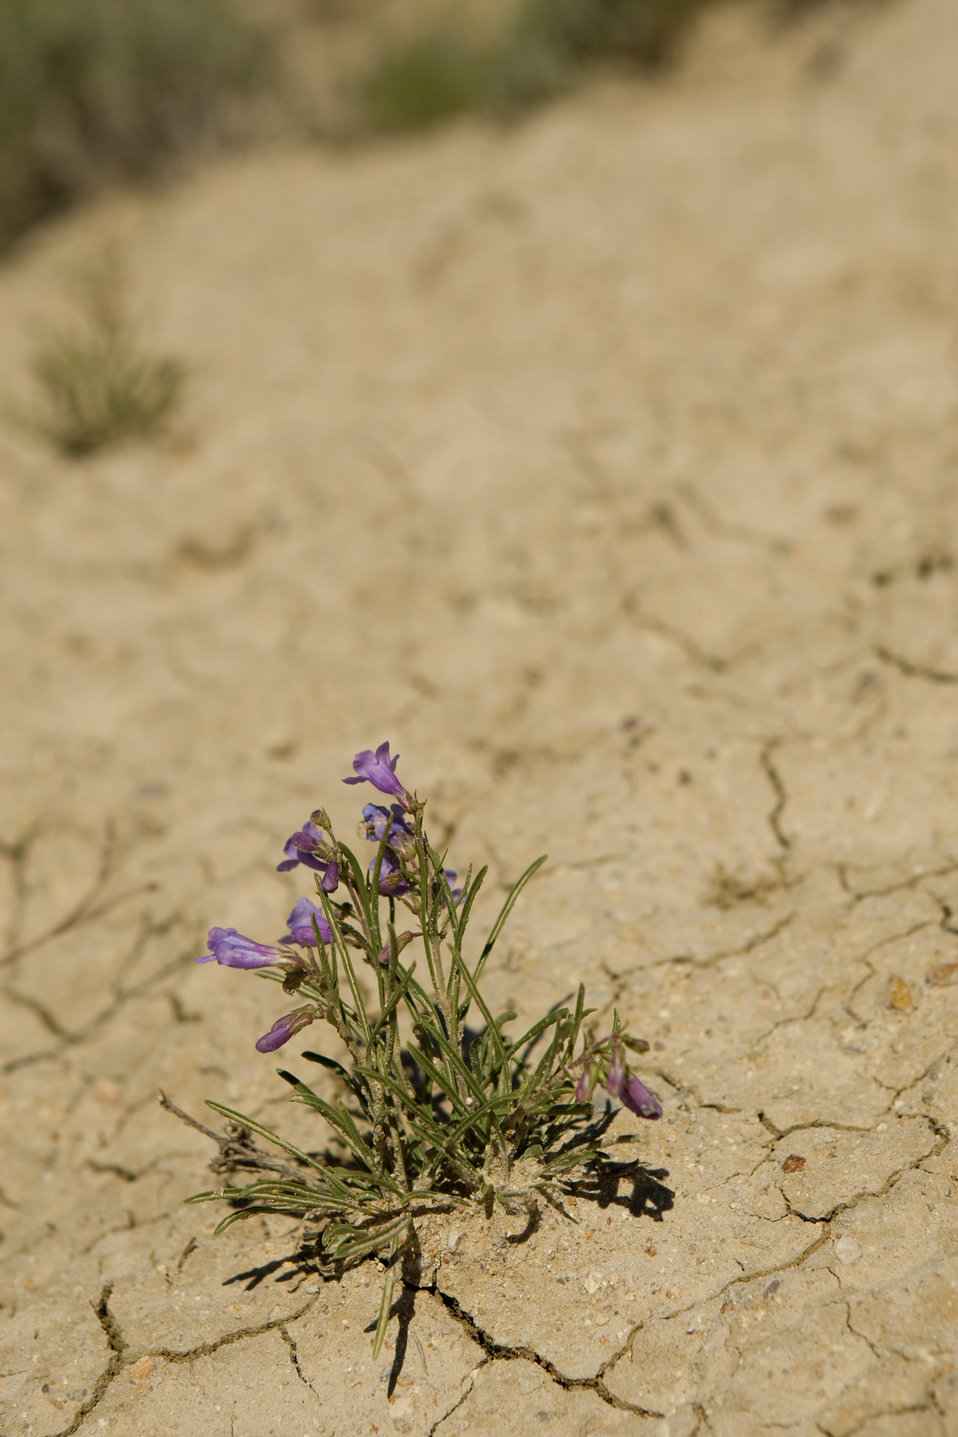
Colorado Rare Plant Conservation Initiative

The Colorado Rare Plant Conservation Initiative (RPCI) is a partnership of 23 statewide and regional agencies, private organizations, and academic institutions working to conserve 121 rare plants in Colorado. As part of these efforts the group developed the Colorado Rare Plant Conservation Strategy, developed Best Management Practices to reduce energy development impacts, addressed climate change, and developed focused strategies for the conservation of individual species at eight priority landscapes. The group has also worked to coordinate volunteer efforts for plant conservation across the state.